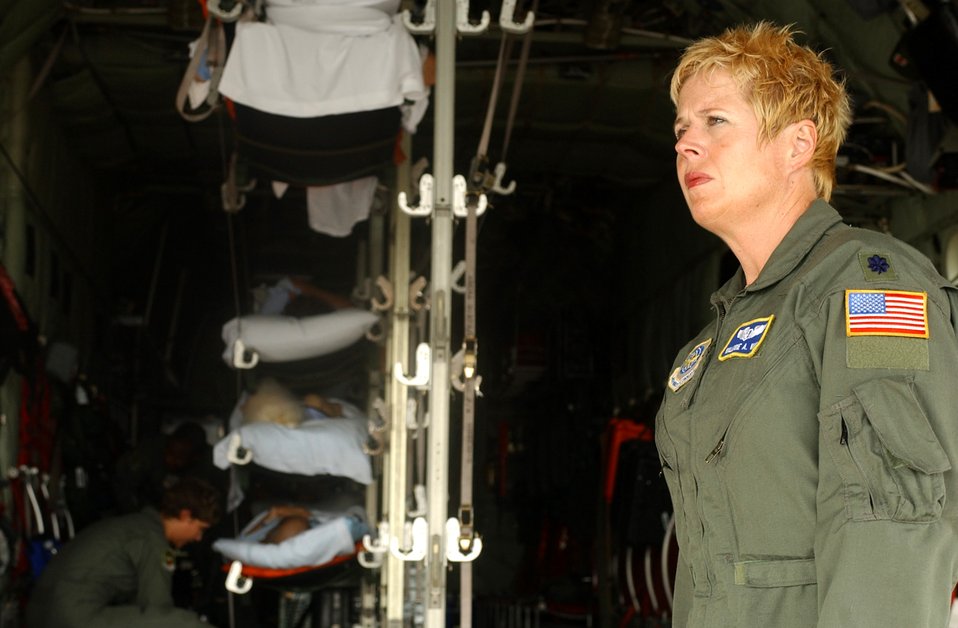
Heading Home

SEBRING AIRPORT, Fla. -- Lt. Col. Valerie Vail waits for fellow Airmen to load another patient onto a C-130 Hercules here Sept. 23. The Hercules flew elderly evacuees back to Key West, Fla. following Hurricane Rita. The Air Force is assisting with the Hurricane Rita humanitarian operations. Colonel Vail is a nurse with the North Carolina Air National Guard's 156th Aeromedical Evacuation Squadron.